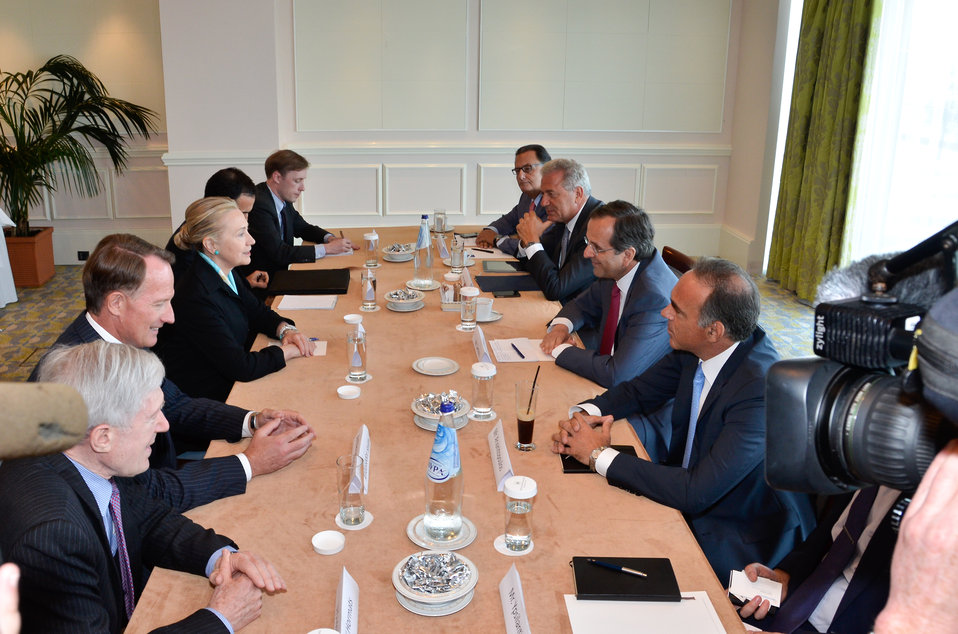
Secretary Clinton and Members of U.S. Delegation Meet With Greek Officials

U.S. Secretary of State Hillary Rodham Clinton meets with Greek officials in Athens, Greece, on July 18, 2011. Accompanying Secretary Clinton are Under Secretary of State for Economic, Energy and Business Affairs Robert Hormats, top left; U.S. Ambassador to Greece Daniel B. Smith, right of the Secretary; and Assistant Secretary of State for European and Eurasian Affairs Philip Gordon, left of the Secretary.